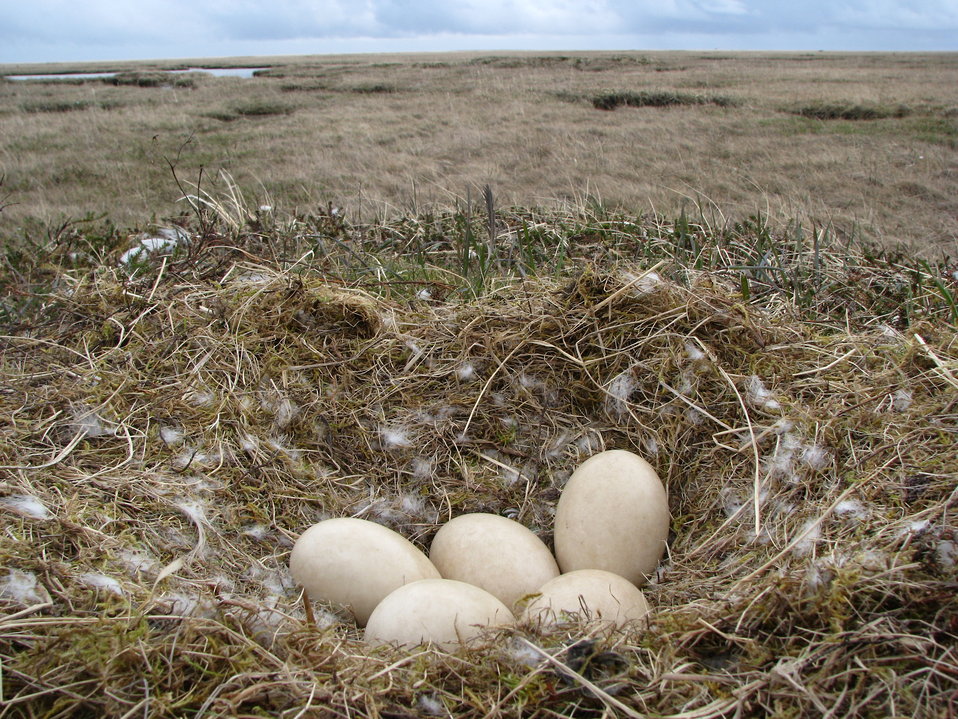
Swan eggs

Yukon Delta NWR